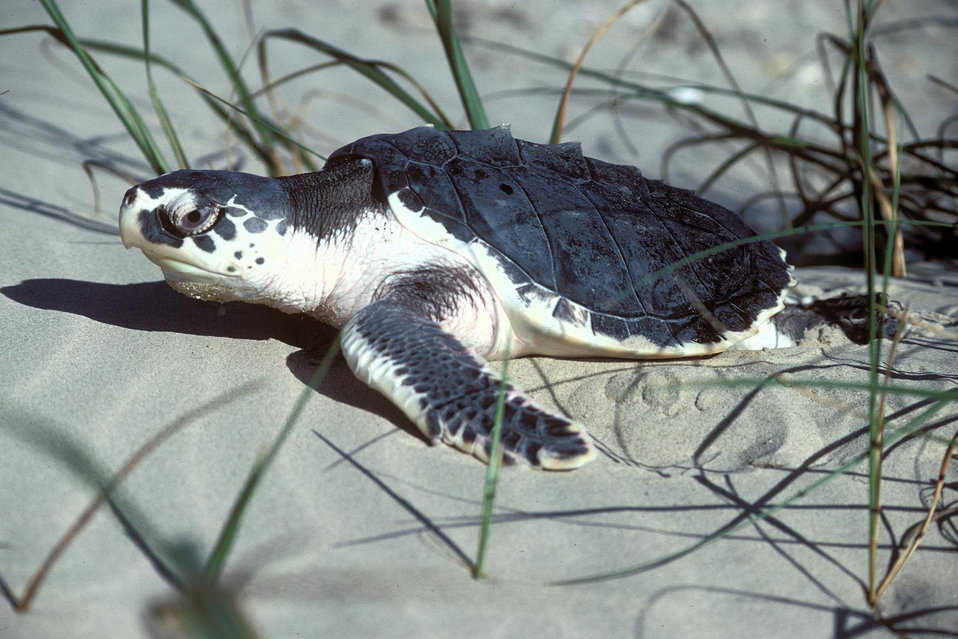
Kemps Ridley Sea Turtle, Texas